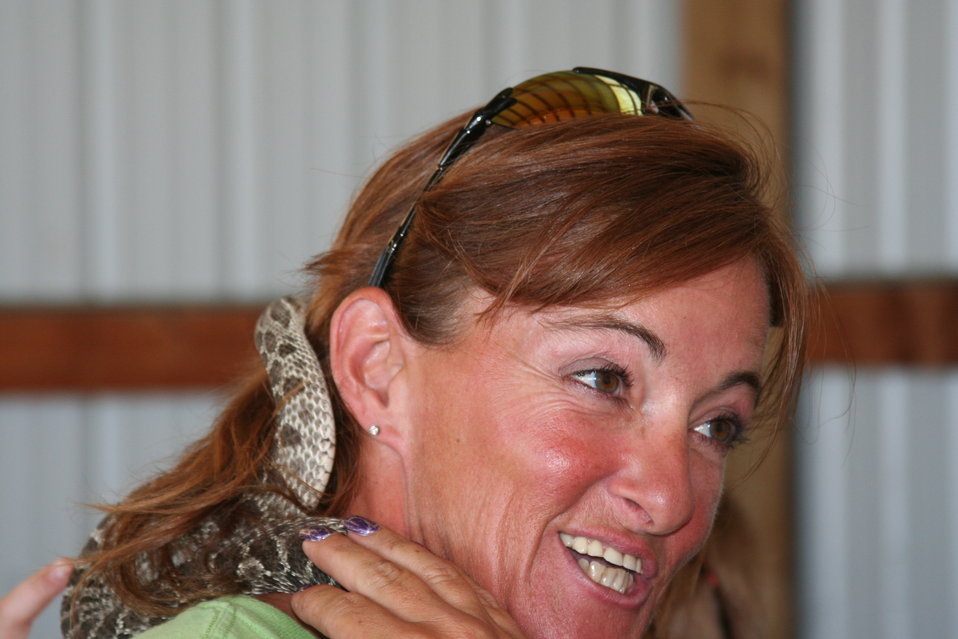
2011 Huron Prairie Fest

Some hands-on reptile activity.